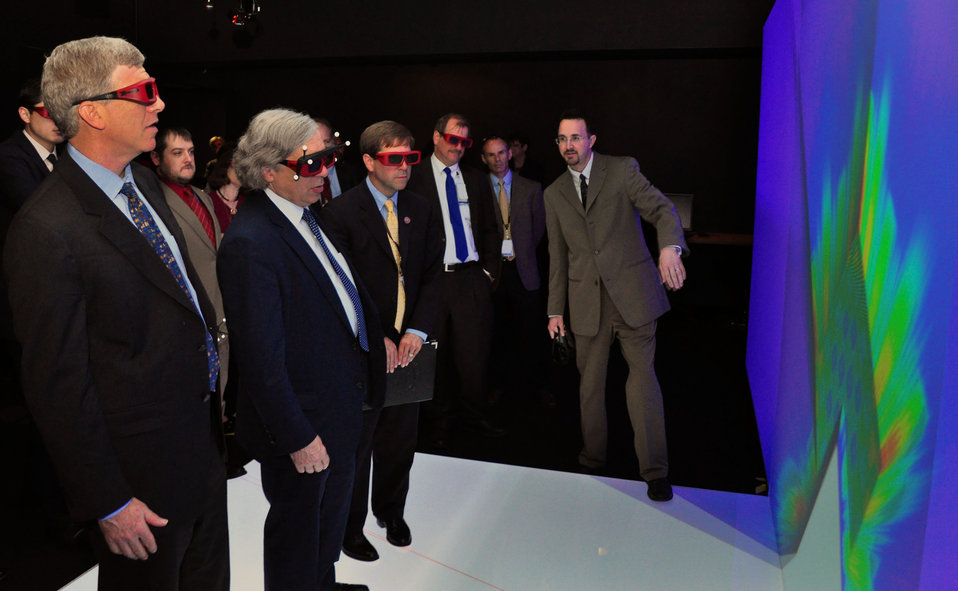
DOE Secretary of Energy Ernest Moniz in Oak Ridge

13-064 DOE photo Lynn Freeny Oak Ridge Tennessee